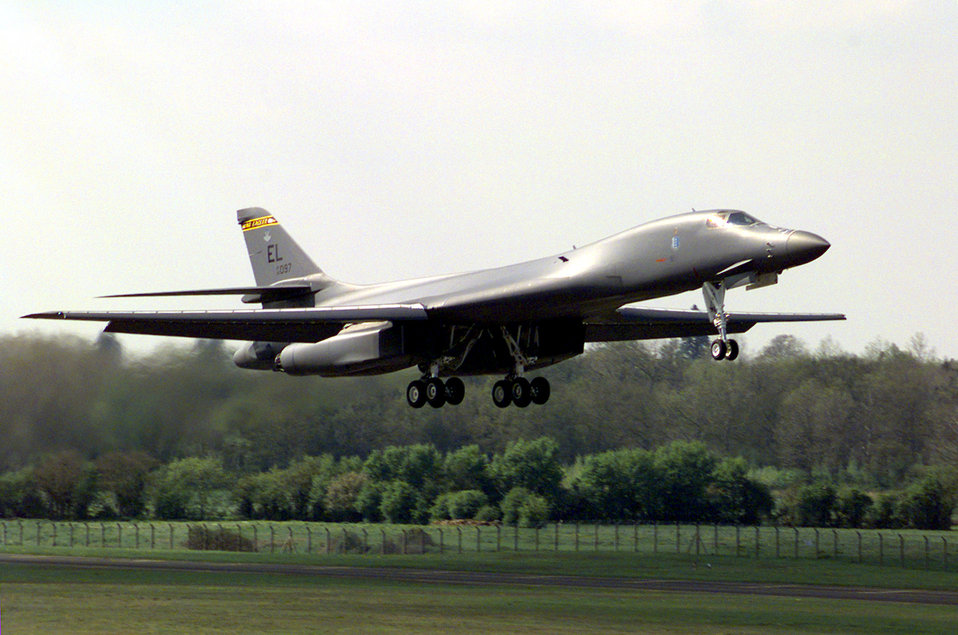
The Lancer is in the air

ROYAL AIR FORCE FAIRFORD, England -- A B-1B Lancer, assigned to the 77th Bomb Squadron at Ellsworth Air Force Base, S.D., takes off here May 3, 1999. Aircraft and personnel from the 77th are deployed here as part of the 2nd Air Expeditionary Group supporting Operation Allied Force.